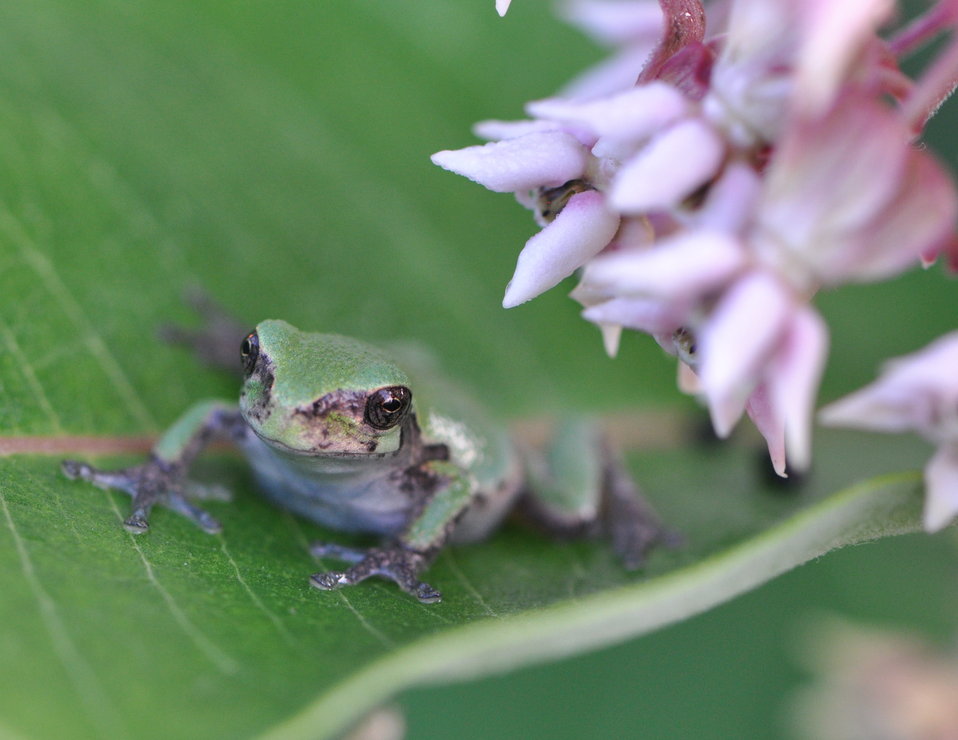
Eastern Gray Treefrog at Horicon National Wildlife Refuge